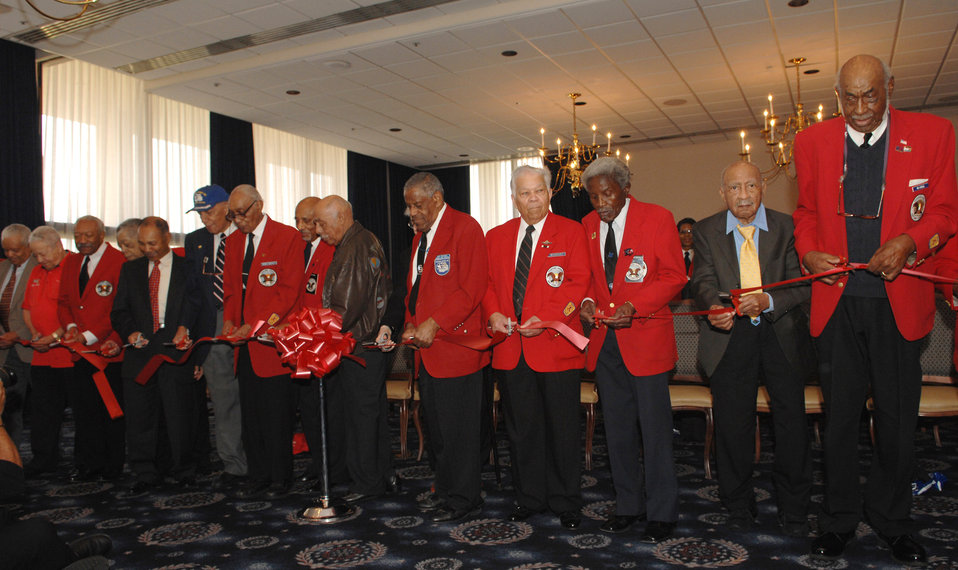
Original members of the Tuskegee Airmen cut the ribbon at the dedication ceremony of the